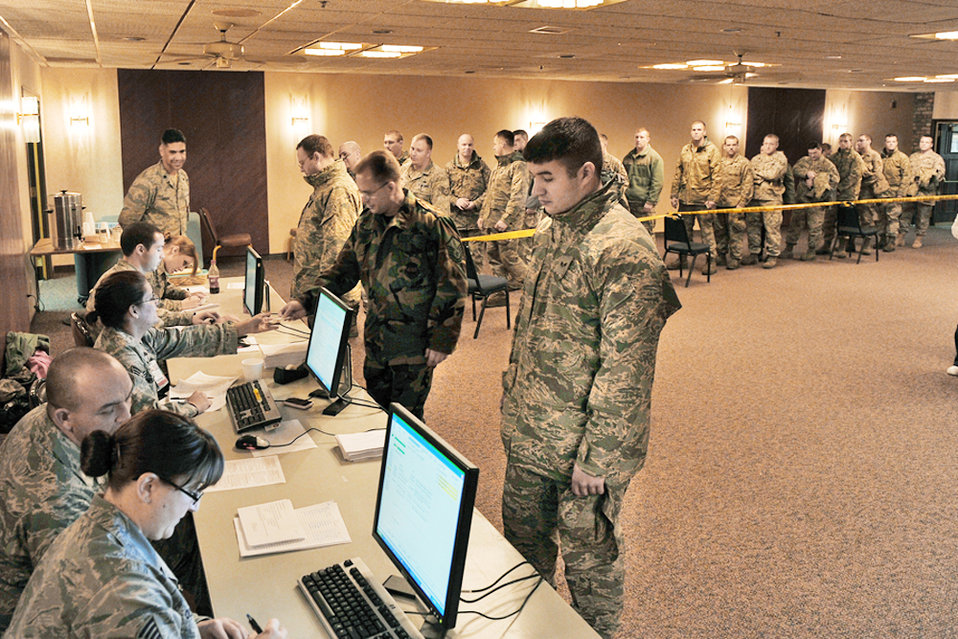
Ensuring medical readiness

Members of the 55th Medical Group inprocess patients during a point of distribution exercise Jan. 21, 2010, at Offutt Air Force Base, Neb. More than 1,000 active-duty servicemembers processed through the center to test the 55th Wing's ability to respond to a public health emergency.